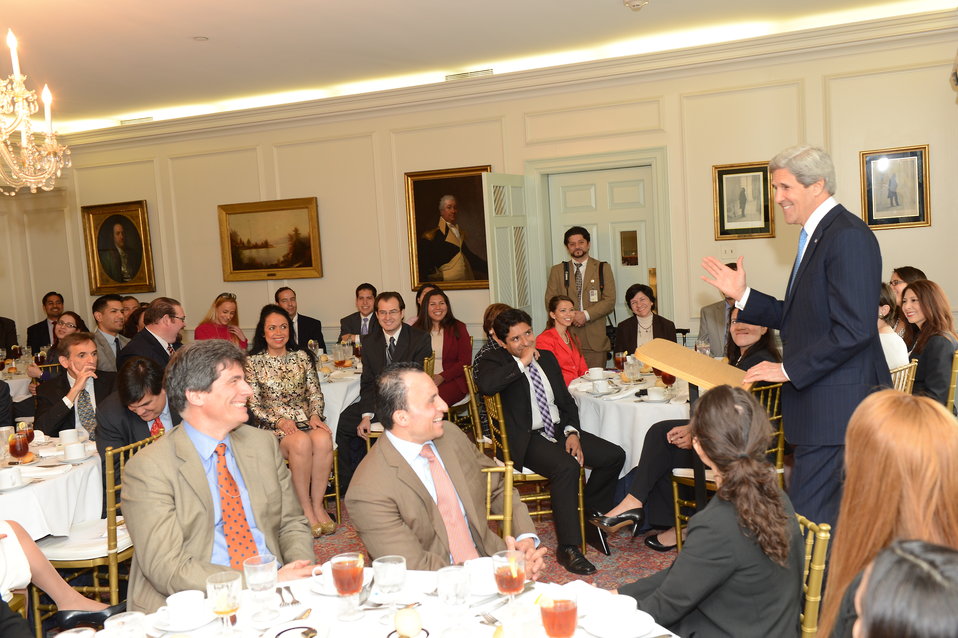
Secretary Kerry Delivers Remarks at the Hispanic Employees Council of the Foreign Affairs Agencies Luncheon

U.S. Secretary of State John Kerry delivers remarks at the Hispanic Employees Council of the Foreign Affairs Agencies luncheon at the U.S. Department of State in Washington, D.C., on April 29, 2013.